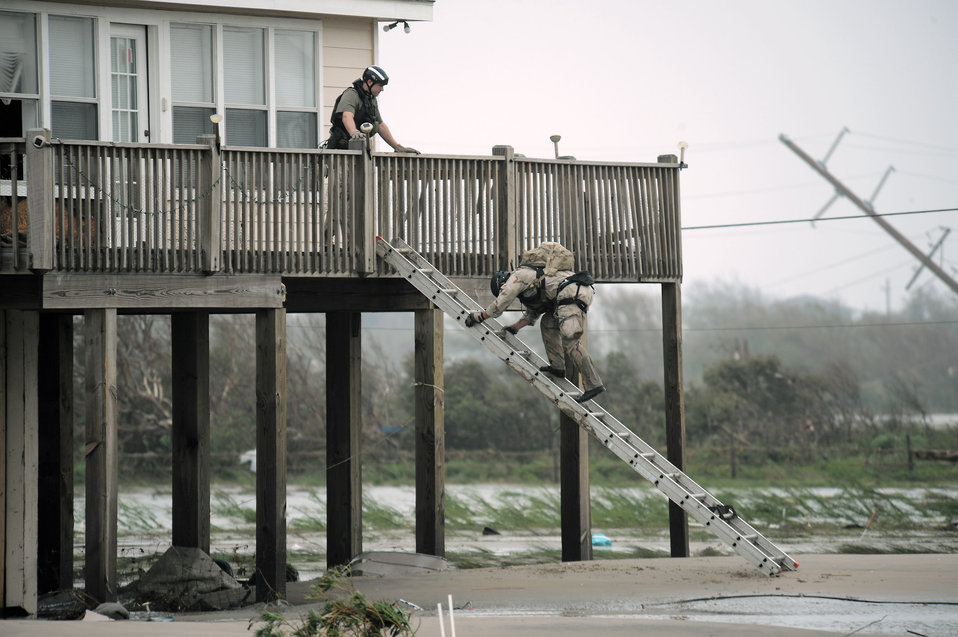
Airmen conduct search, rescue

Senior Airman Brandon Smith (left) and Staff Sgt. Lopaka Mounts conduct search and rescue operations in Galveston, Texas, after Hurricane Ike, Sept. 13. Sergeant Mounts and Airman Smith are both pararescueman assigned to the 331st Air Expeditionary Group at Randolph Air Force Base, Texas.